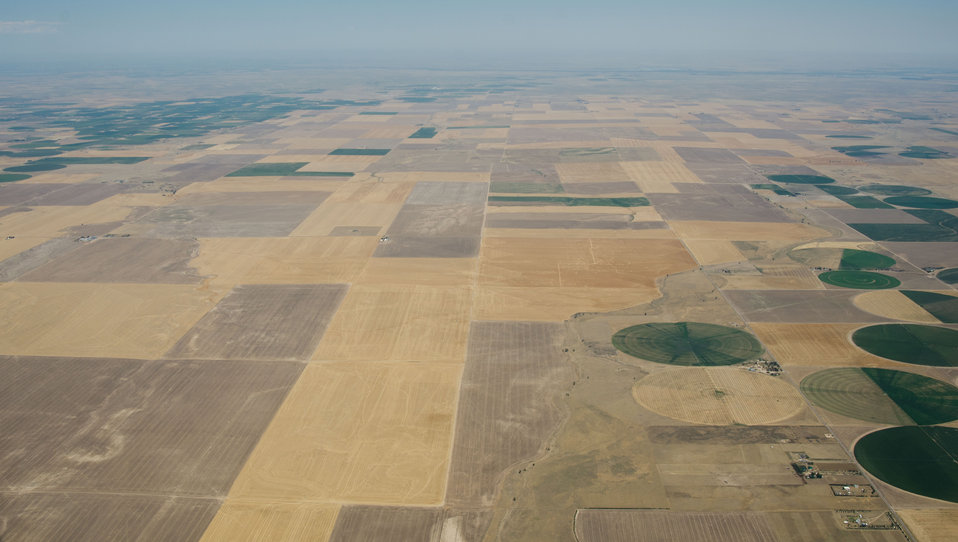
Aerial views of drought affected Colorado farm lands, 83 miles east of Denver, Colorado on Saturday, July 21, 2012. Green areas are irrigated, the yellow areas are dryland wheat crops.